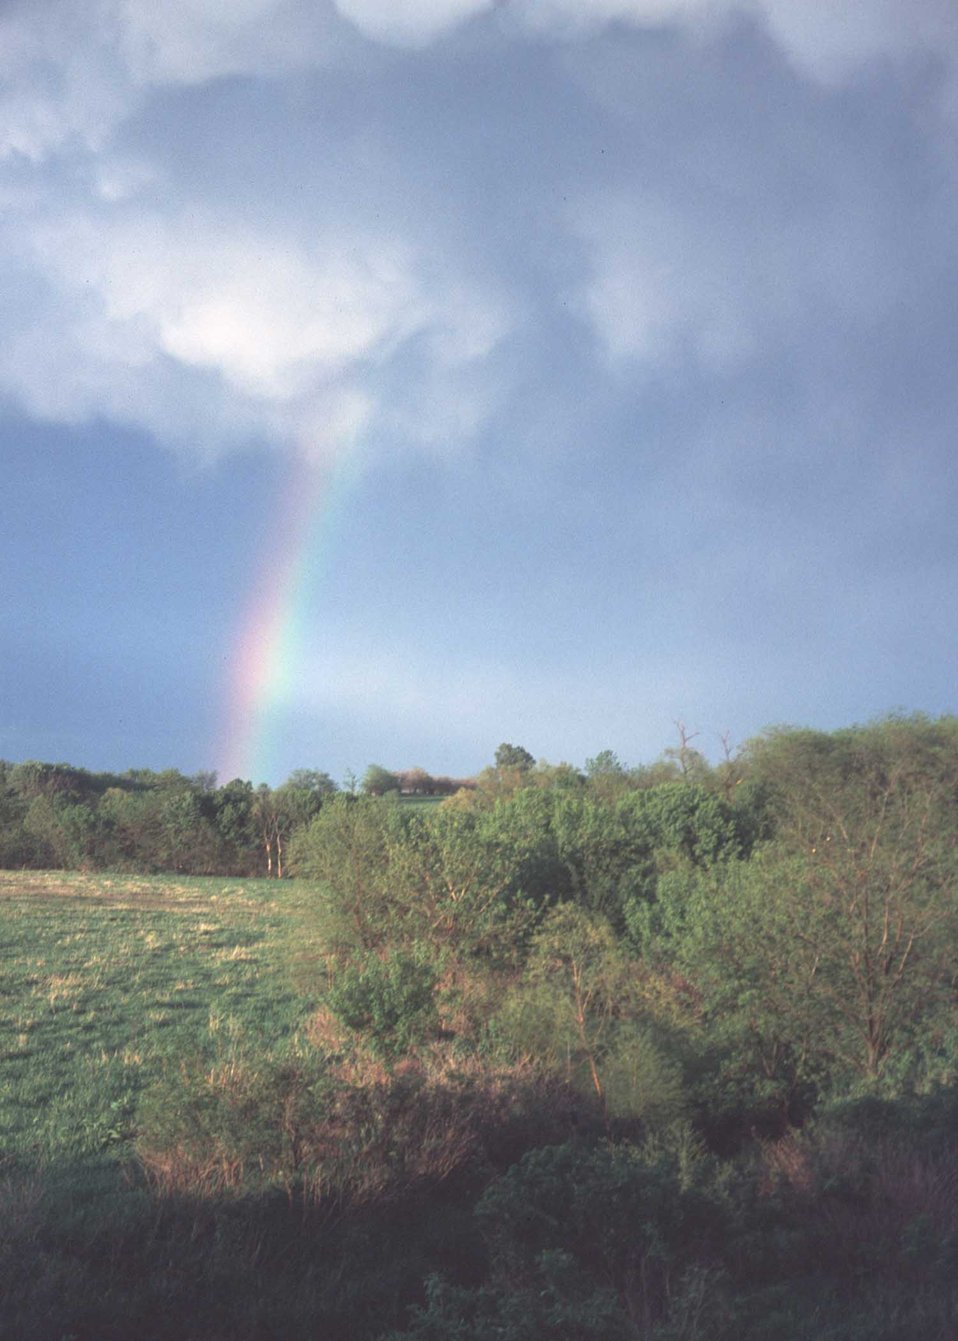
A riparian area within a pasture at the end of a rainbow in southeastern Iowa.